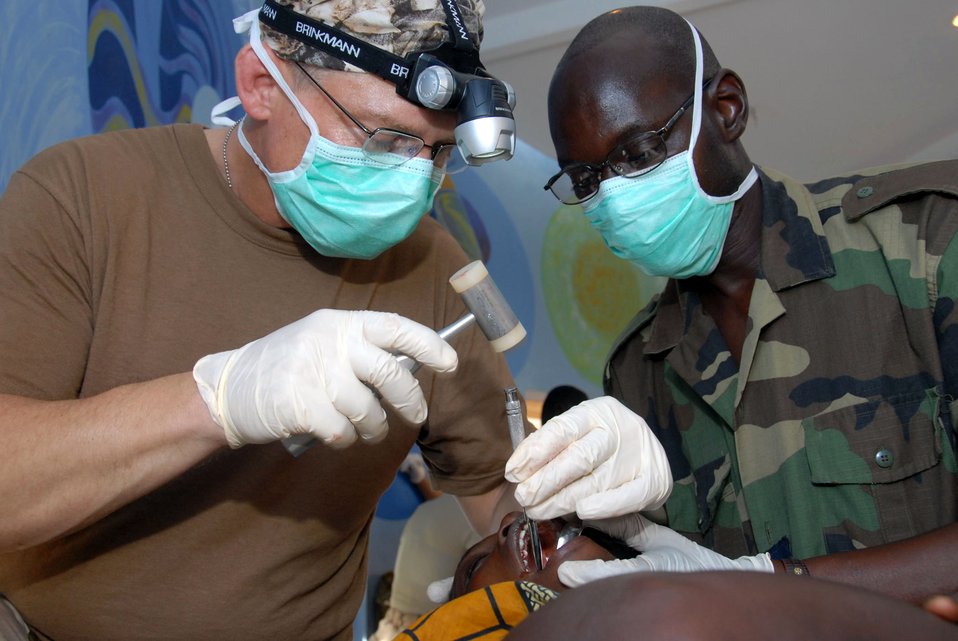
Medics bring relief to Senegal

Lt. Col. (Dr.) Scott Sayre uses field dentistry to remove bone in order to remove the tooth of a Senegalese patient during Shared Accord 07 June 16 to 28 in Linguere, Senegal. Colonel Sayre is being assisted by Senegalese Army Corp. Chief Idy Diarra, a surgical technician.